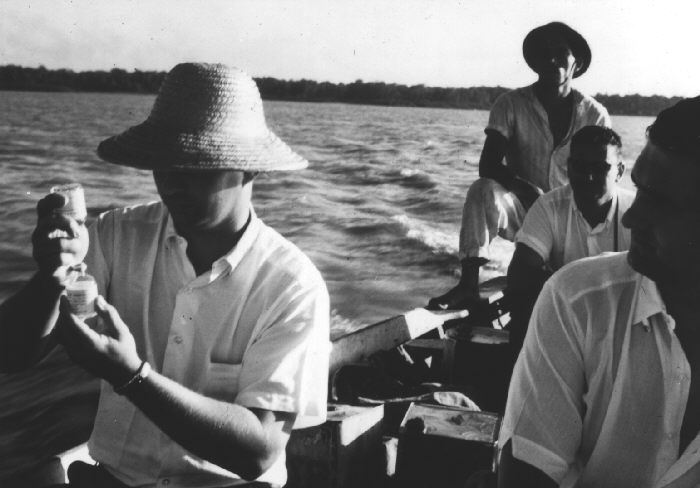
Smallpox Immunization team in Brazil